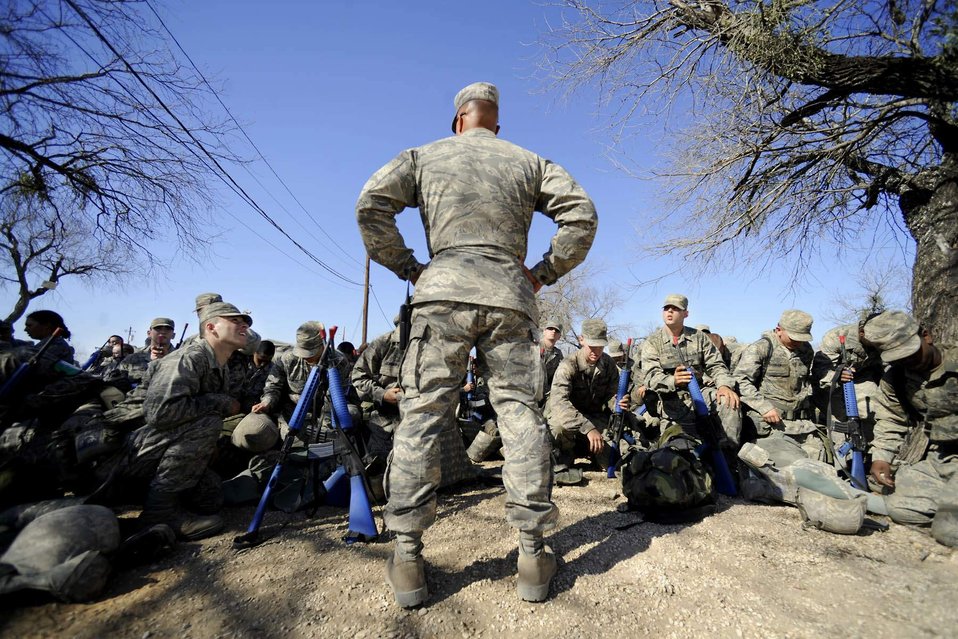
Basic Training

Master Sgt. Tim Burton, a military training instructor, holds the undivided attention of recruits at Lackland Air Force Base, Texas. Military training instructors now conduct an extended basic training program that runs eight-and-a-half weeks, two weeks longer than the previous program.